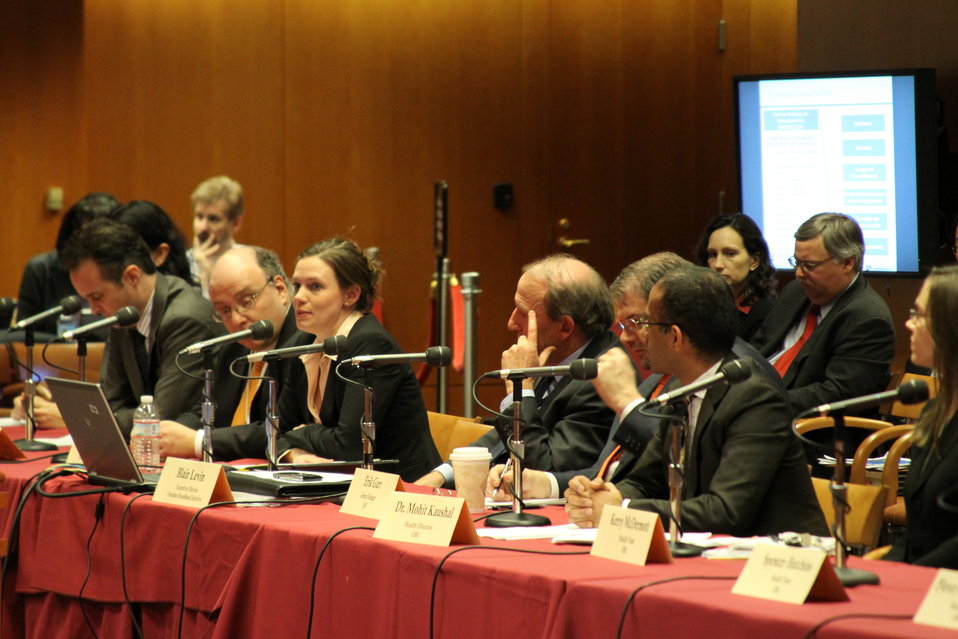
Open Commission Meeting - 2/18/2010

The Federal Communications Commission will hold an Open Meeting in Washington, DC. on February 18, 2010, which will include the following items:

E-Rate: An Order and Notice of Proposed Rulemaking to enable schools that receive funding from the E-Rate program to allow members of the general public to use the schools' Internet access during non-operating hours at no additional cost to the Universal Service Fund. This order and notice do not permit or require any changes to E-Rate applications due on February 11, 2010; Ex Parte Reform: A Notice of Proposed Rulemaking to improve the transparency and effectiveness of the FCC's decision-making process by reforming the ex parte rules; Procedural Reform: A Notice of Proposed Rulemaking to enhance the efficiency, openness, and transparency of the Commission's proceedings by improving and modernizing certain organizational and procedural rules; National Broadband Plan Status Report: Commission staff will report on the status of the National Broadband Plan, providing a framework for the national purposes portion of the Plan.